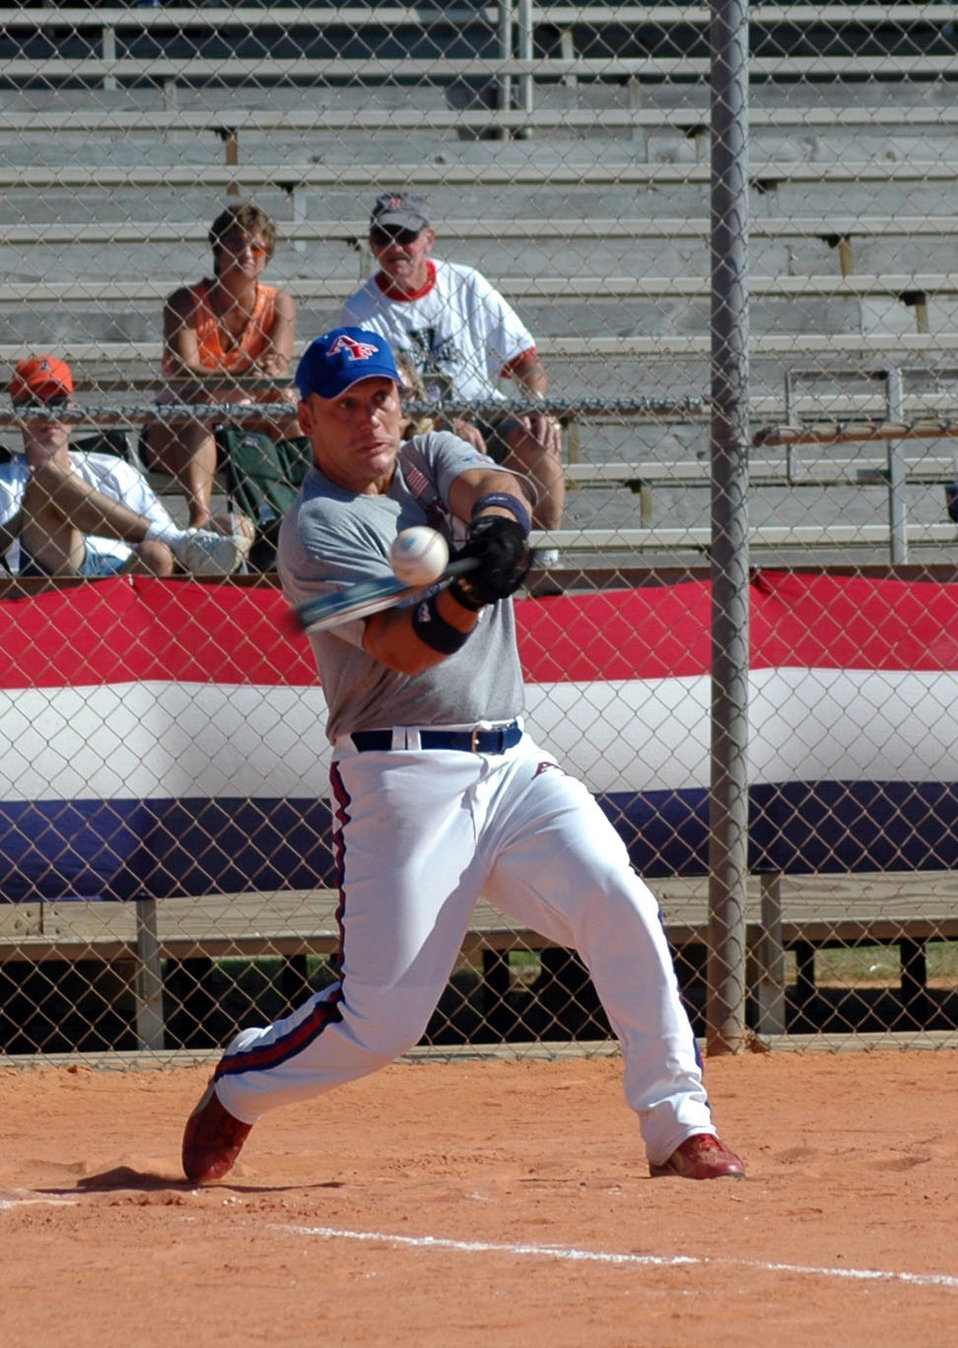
Air Force goes back-to-back, claims third title in four years

EGLIN AIR FORCE BASE, Fla. -- James Flagg cracks a base hit during the 2005 Armed Forces Men's Softball Championships held here Sept. 7 to 9. Air Force claimed the title with a 7-2 record during the round-robin tournament.